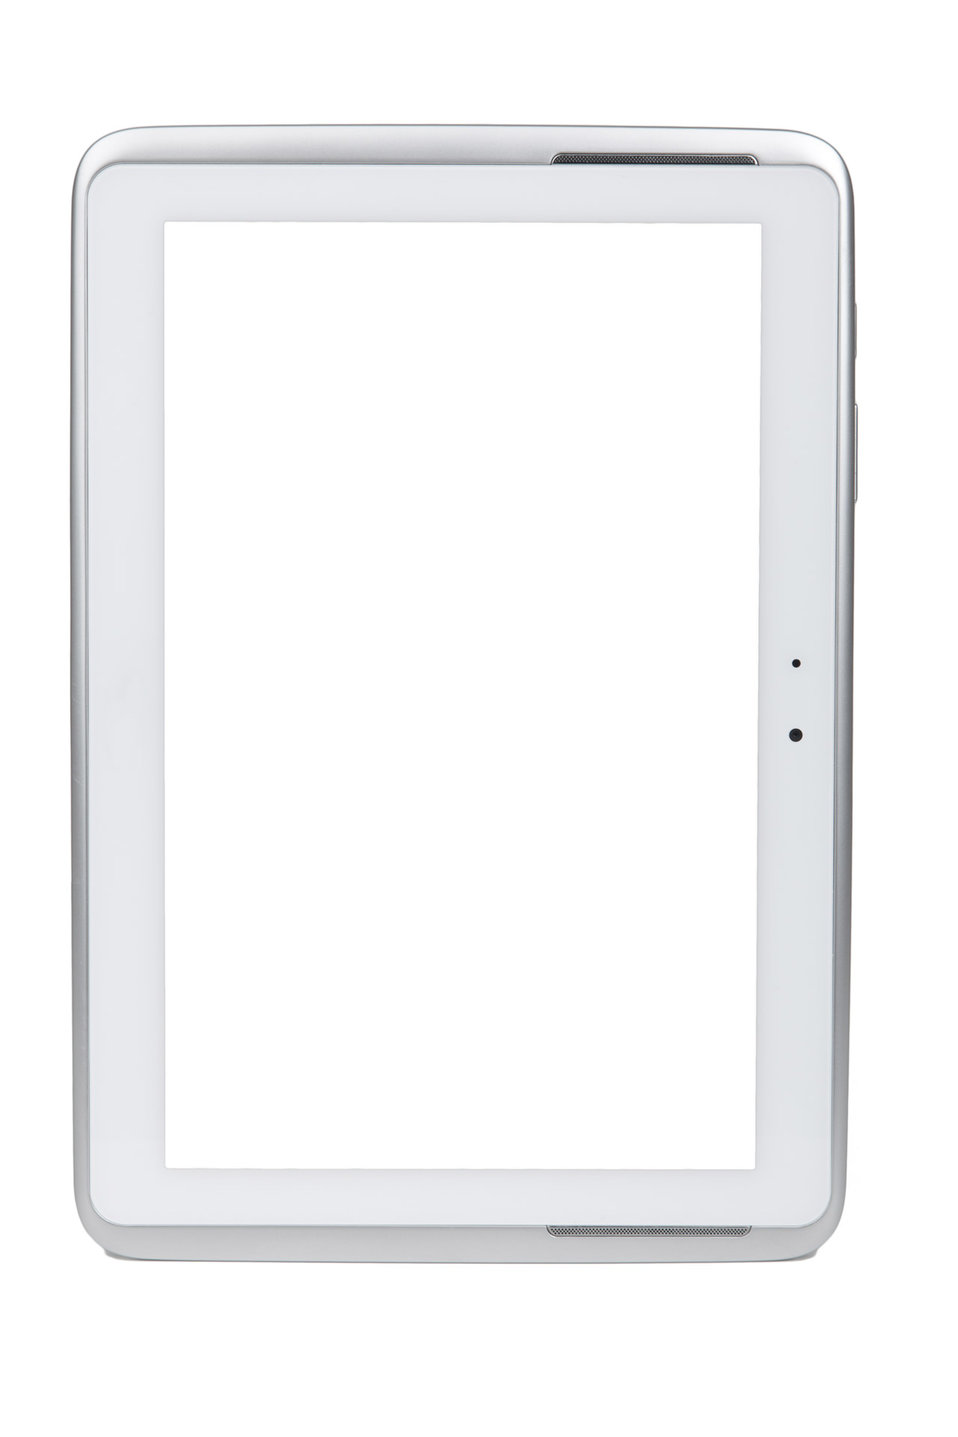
Tablet with blank screen

A white tablet with a white blank screen isolated on white background.